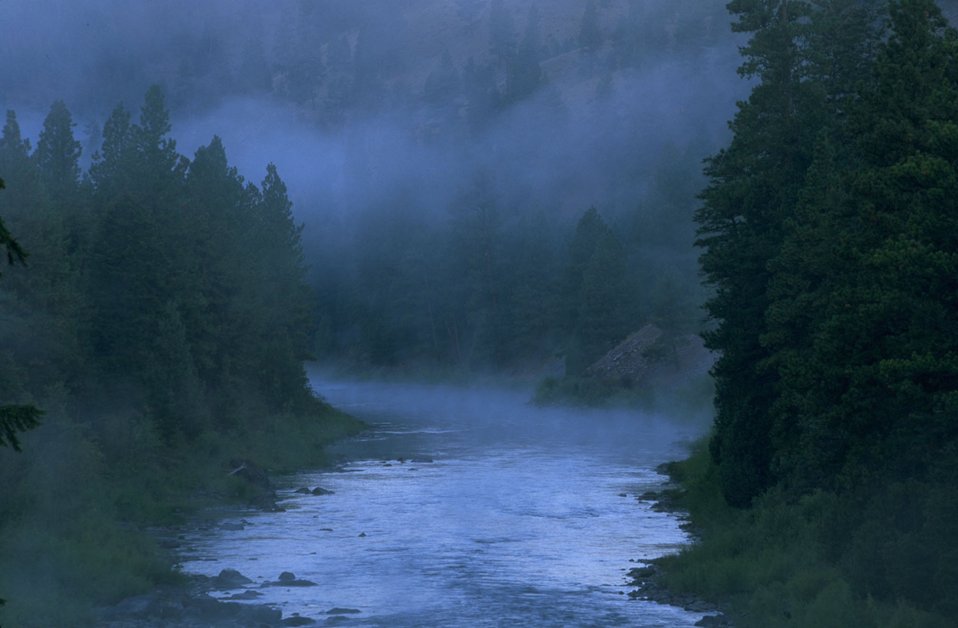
Fog at dawn on the Blackfoot River